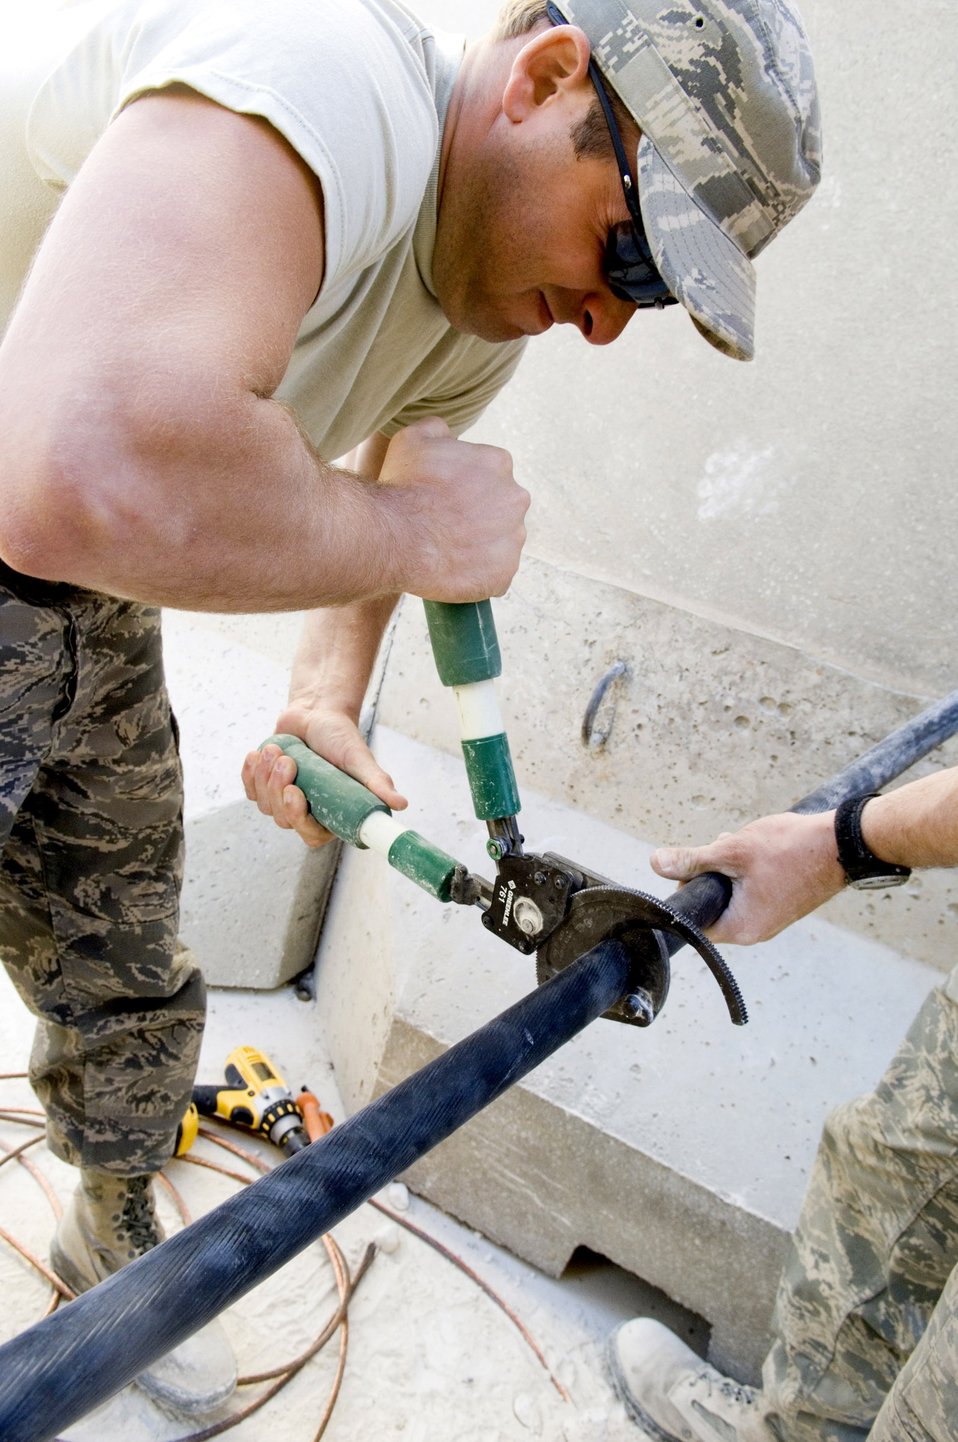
Air Force engineers improve Marine quality of life in Iraq

Senior Airman Jonathan Zeggler cuts a power cable to specifications to install in one of the newly-constructed convoy briefing rooms Nov. 24 at Al Asad Air Base, Iraq. Airman Zeggler, a 557th Expeditionary REDHORSE electrician, is deployed from Barksdale Air Force Base, La.